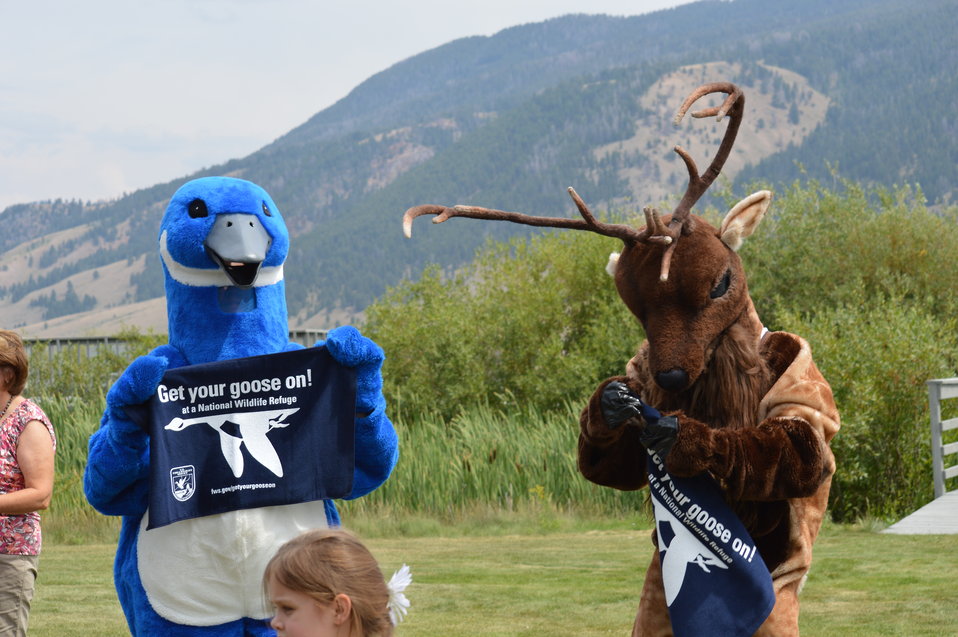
Get Your Goose On! - National Elk Refuge Style

On August 10, 2012 the U.S. Fish and Wildlife Service and Partners celebrated the 100 year anniversary of the establishment of the National Elk Refuge. In these photos, young attendees, along with Puddles the Blue Goose and the National Elk Refuge's mascot, showed us how to Get Your Goose On! with style.